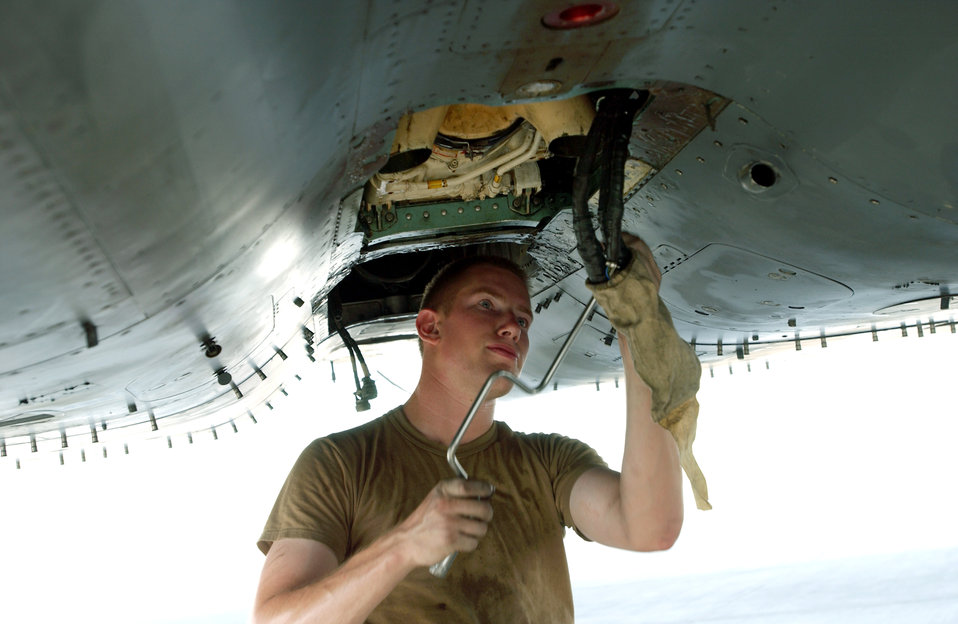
Keeping the strike in the Strike Eagles

Senior Airman Paul Moore performs a phase inspection on an F-15E Strike Eagle at a forward-operating base in Southwest Asia Sept. 1. Airman Moore is an assistant crew chief deployed from the 335th Aircraft Maintenance Unit at Seymour Johnson Air Force Base, N.C.